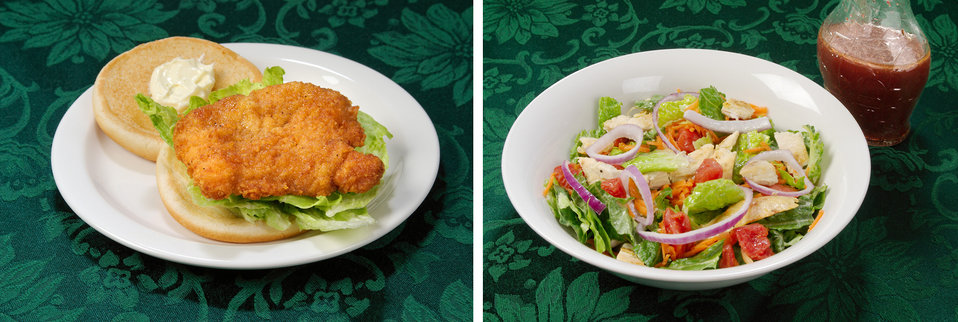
This image tells a story. Its theme is you can make the healthier choice when deciding on a meal. On the left is a fried chicken breast sandwich with 1 tablespoon of mayonnaise, equaling 599 calories. On the right is a chopped broiled chicken breast atop a fresh garden salad, made with two cups of lettuce, 2 ounces of chicken breast, and 2 tablespoons of light balsamic vinaigrette dressing, equaling 178 calories.